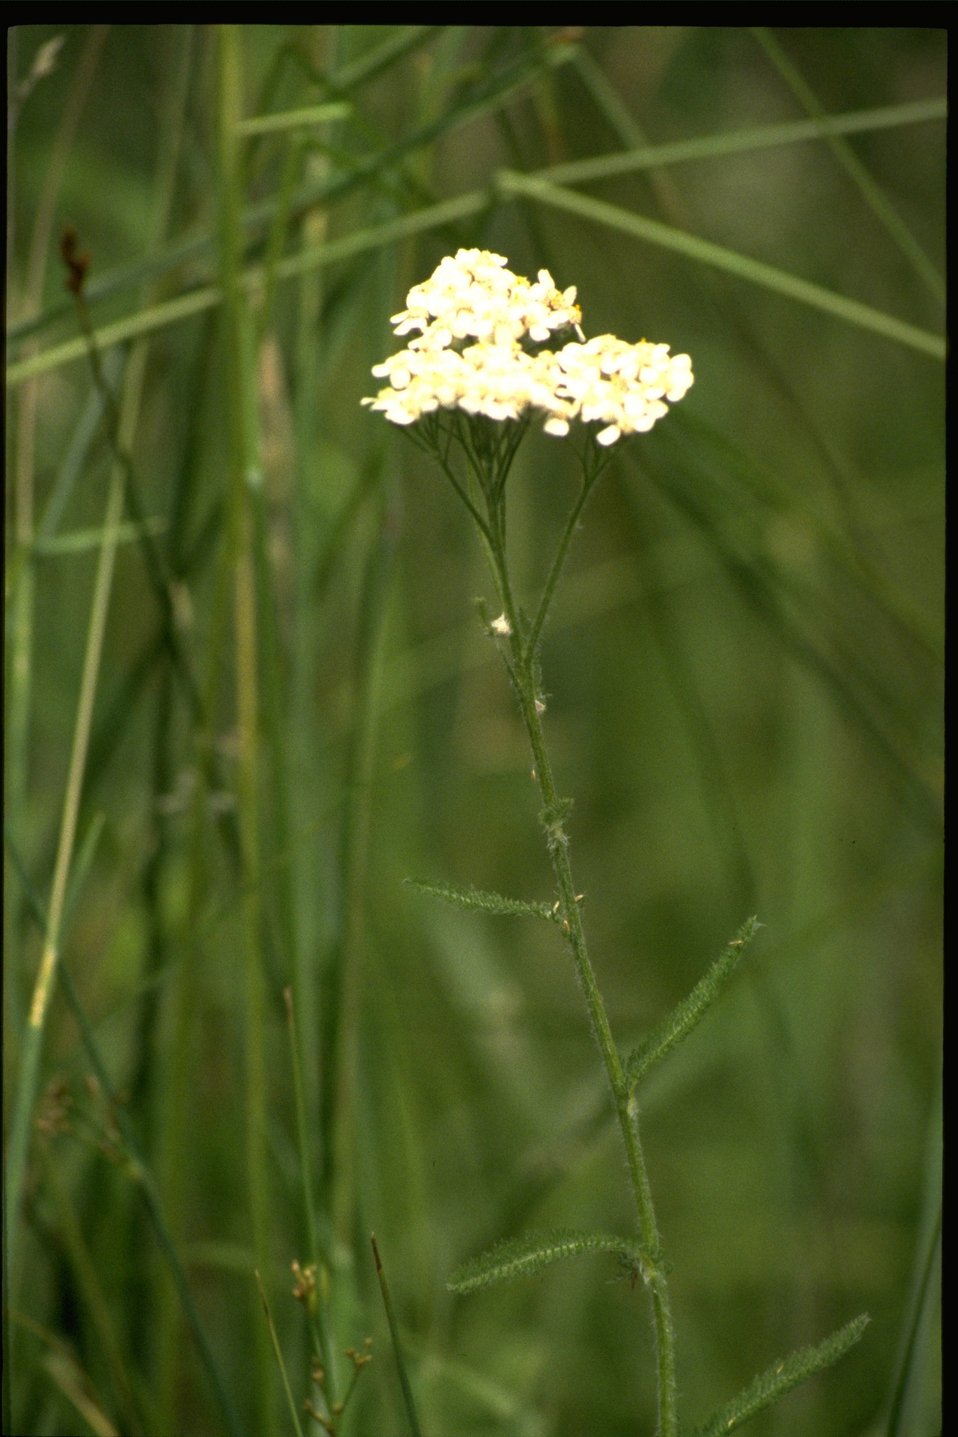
Medium shot of Archillea millefolium.